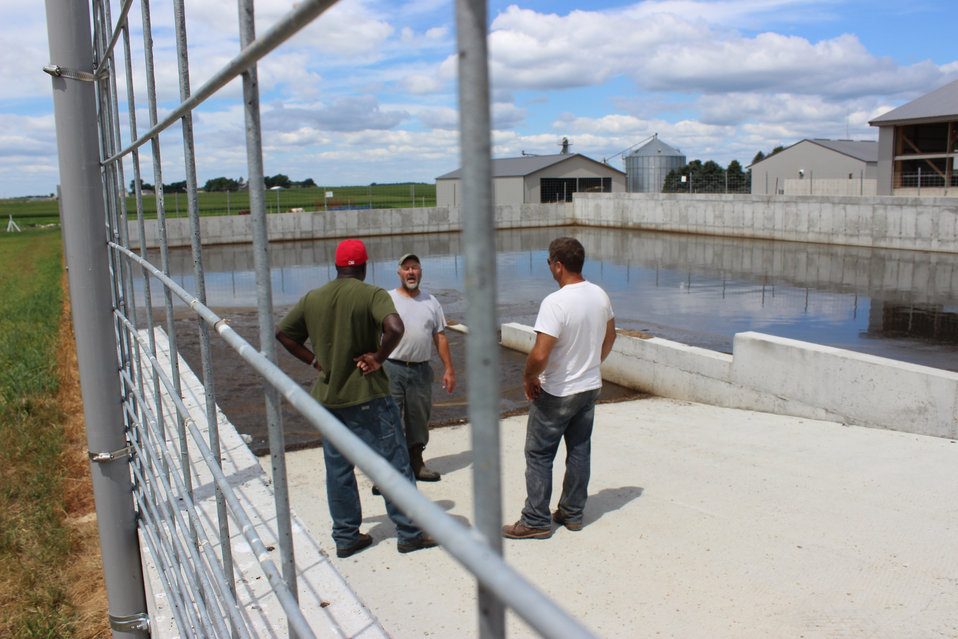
Ranch 2

The U.S. Department of Agriculture's (USDA) Natural Resource Conservation Service (NRCS) helped James “Jim” Johnson build a dairy waste storage facility as part of a comprehensive nutrient management plan.